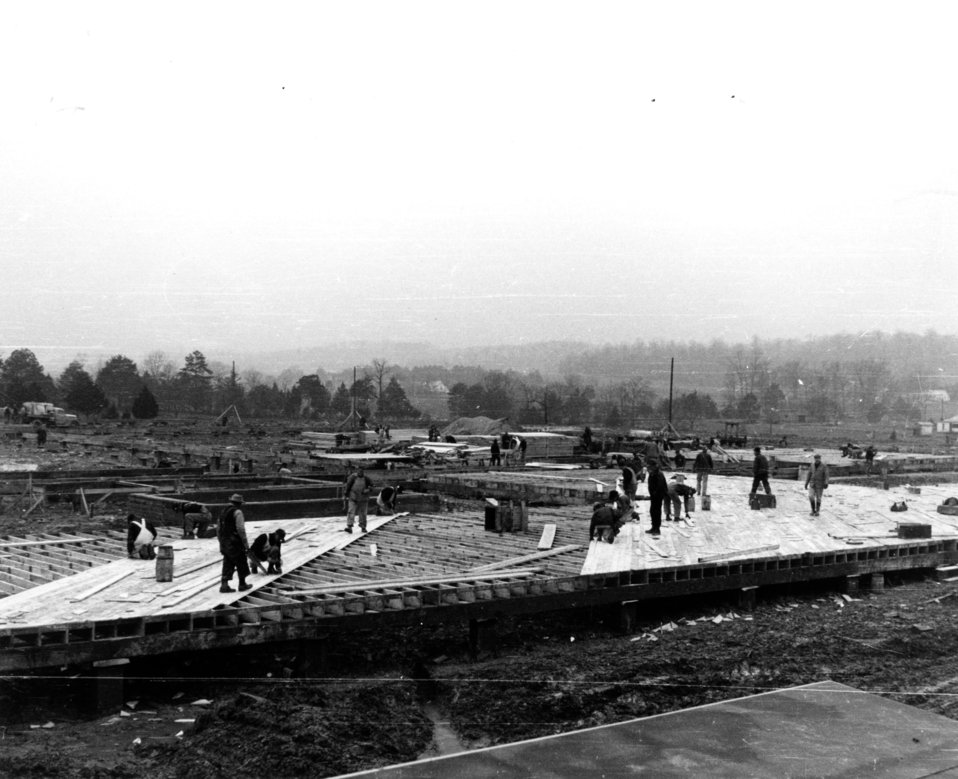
Construction activity at Oak Ridge